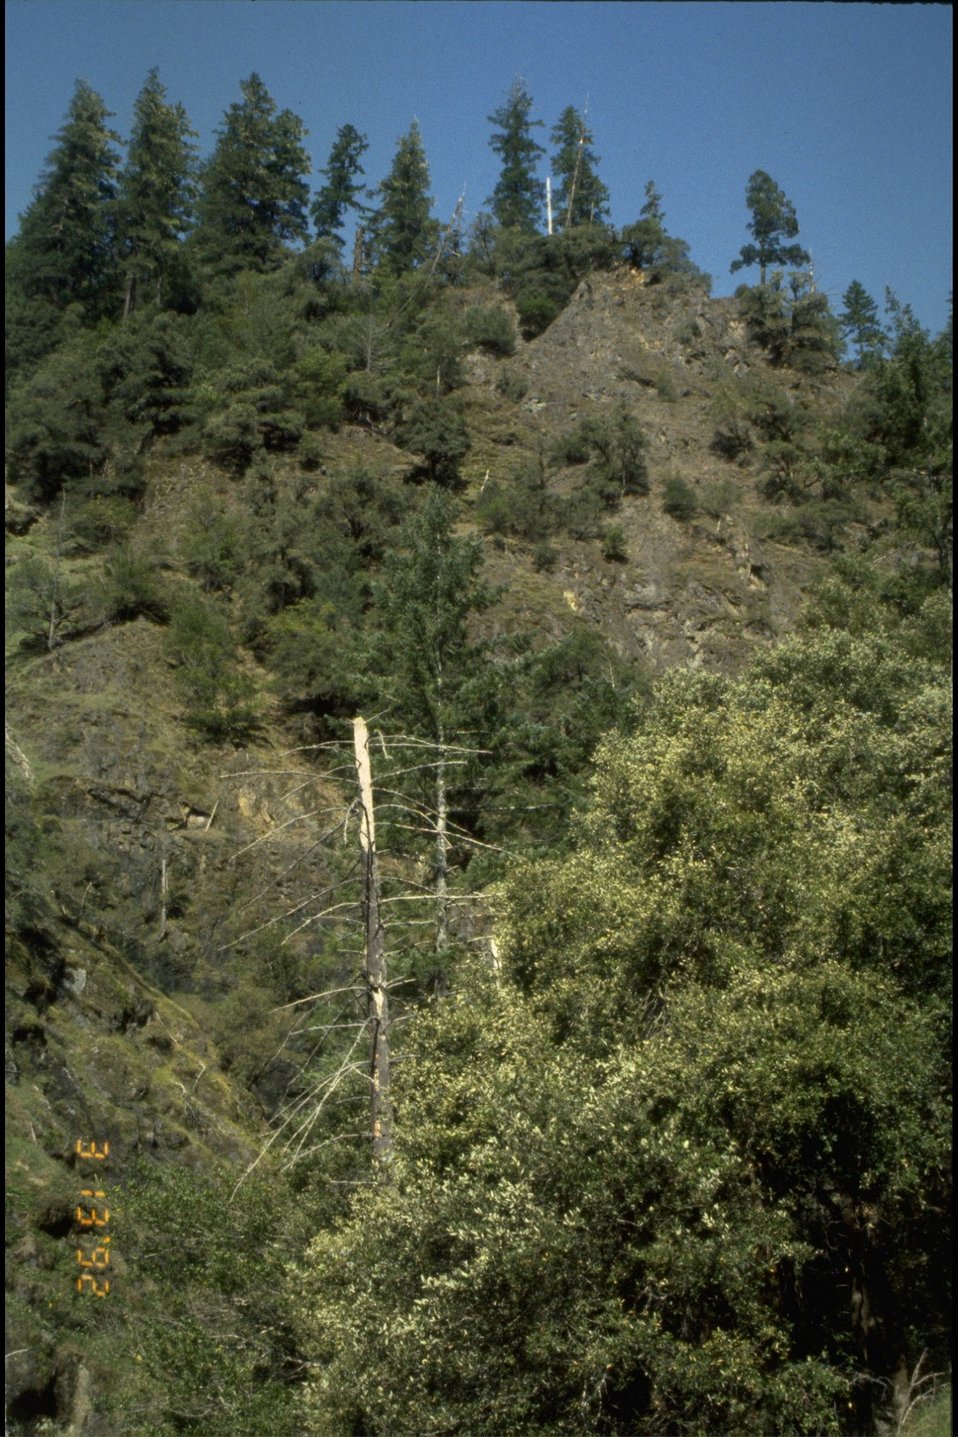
Tucker Flat Area on the Wild Section.